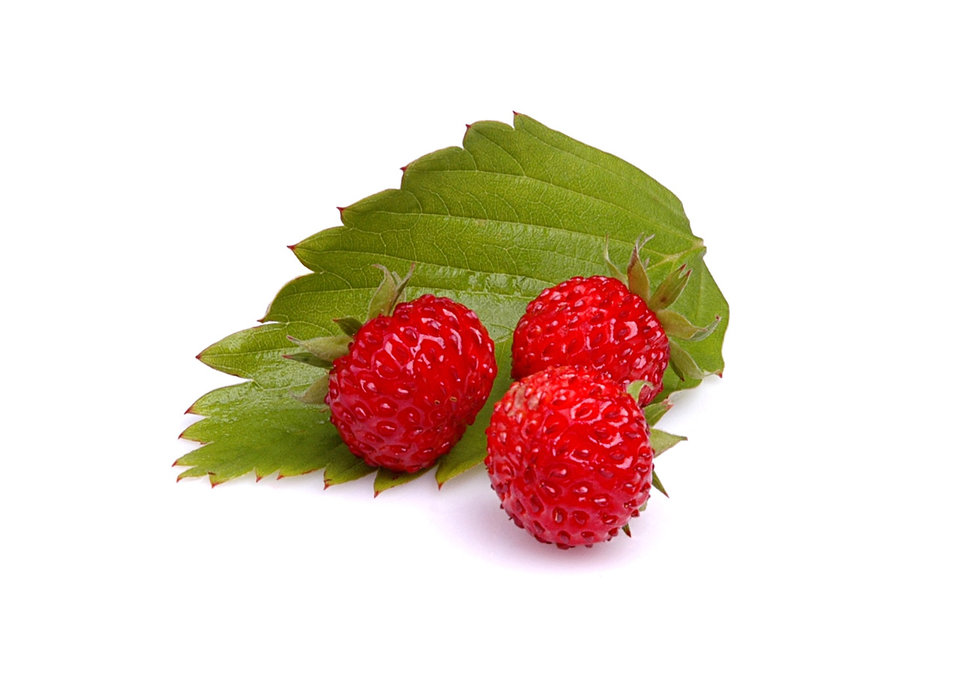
Wild strawberry.